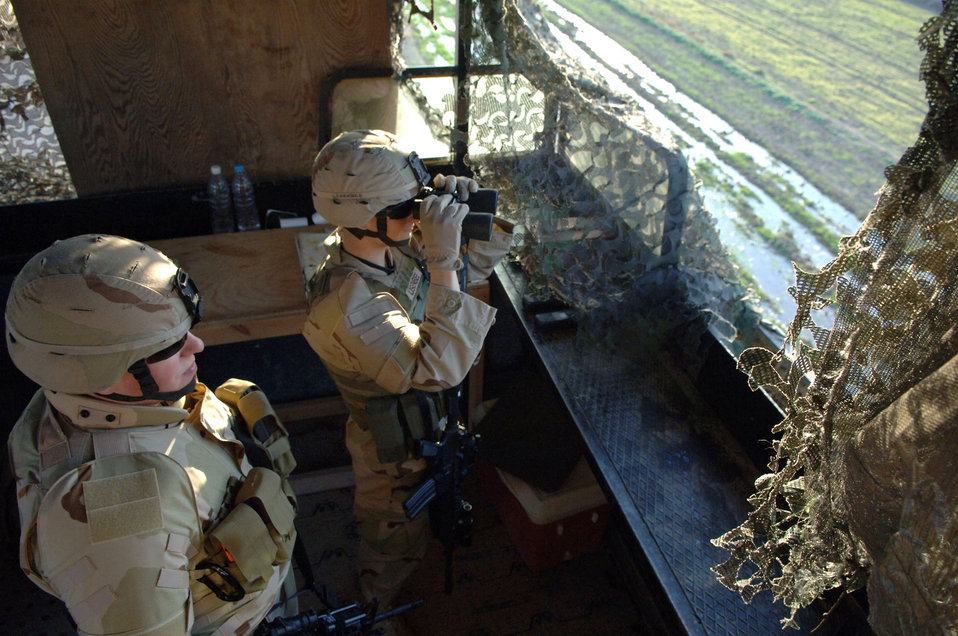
Security forces Airmen protect Iraq's combat airpower hub

Staff Sgt. Joseph Brown and Airman 1st Class Robert Lisenbee use binoculars to survey their sector from a perimeter guard tower at Balad Air Base, Iraq, Feb. 19. The Airmen are assigned to the 332nd Expeditionary Security Forces Squadron.